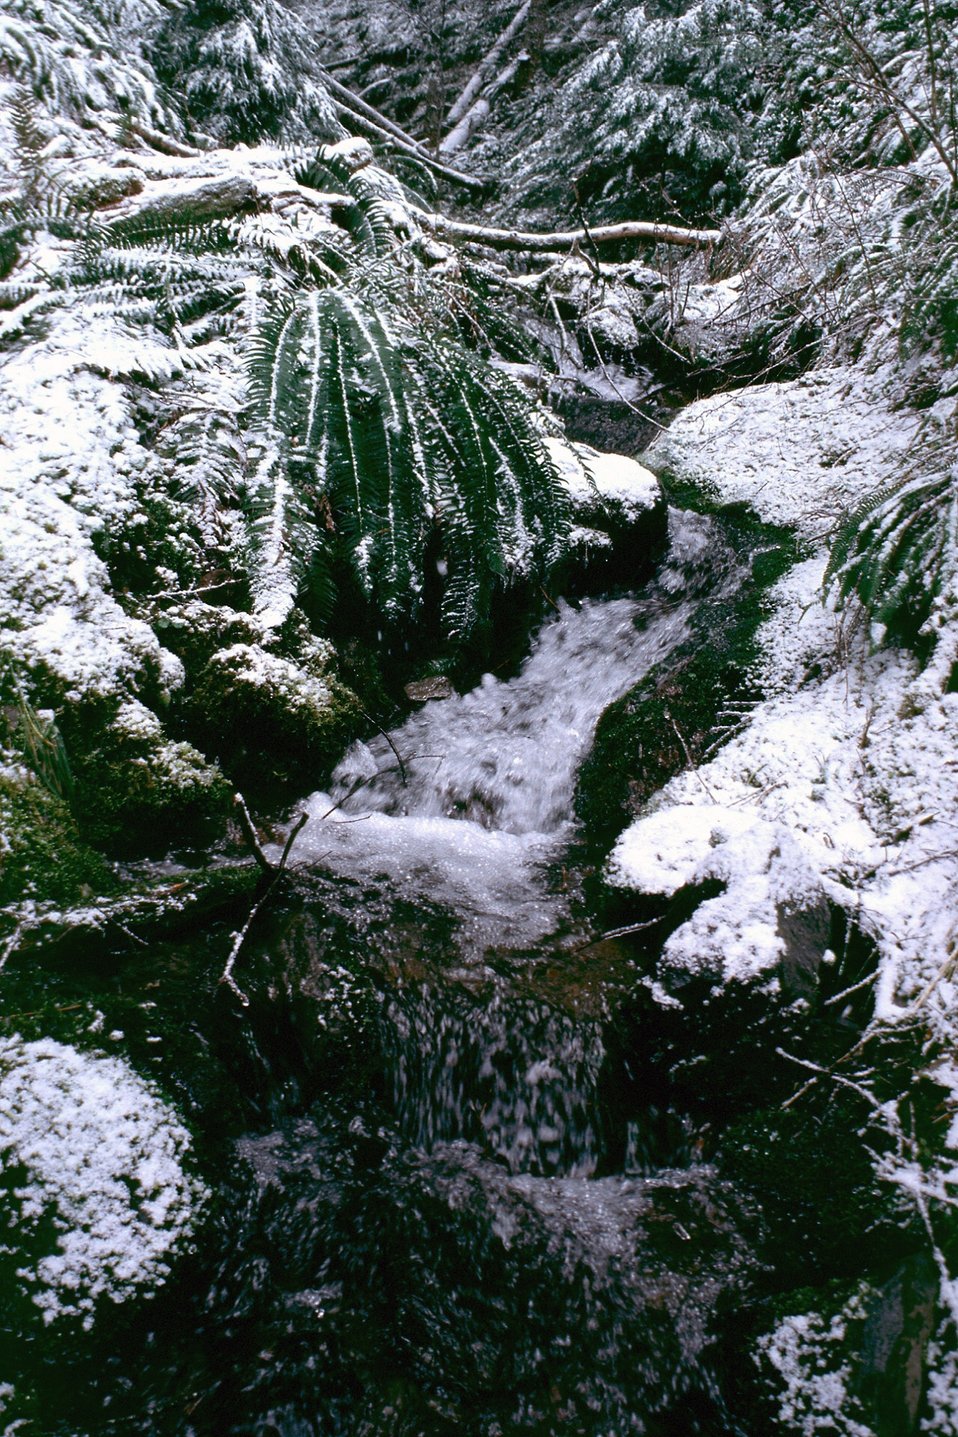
Mid Winter forest scene in the Mollala Corridor.